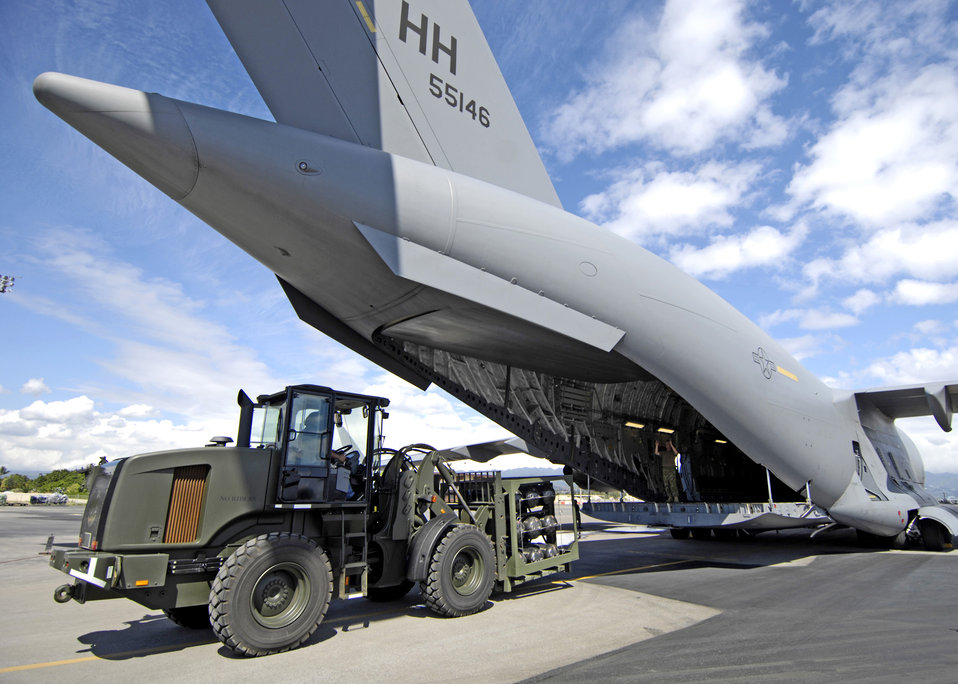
Alternate Energy Source

The HydraFLX System is brought up to the back end of a C-17 Globemaster III to demonstrate its mobile capability at Hickam Air Force Base, Hawaii Oct. 18, 2006. The HydraFLX System is being tested by the Air Force as an alternate energy source. It will generate ultra-pure H2 (hydrogen) from water in a flexible pressure management process for fueling buses, tow-tractors, vans, sedans and ground support equipment. The system can also be deployed anywhere and operate in hostile theaters without infrastructure or pipelines.